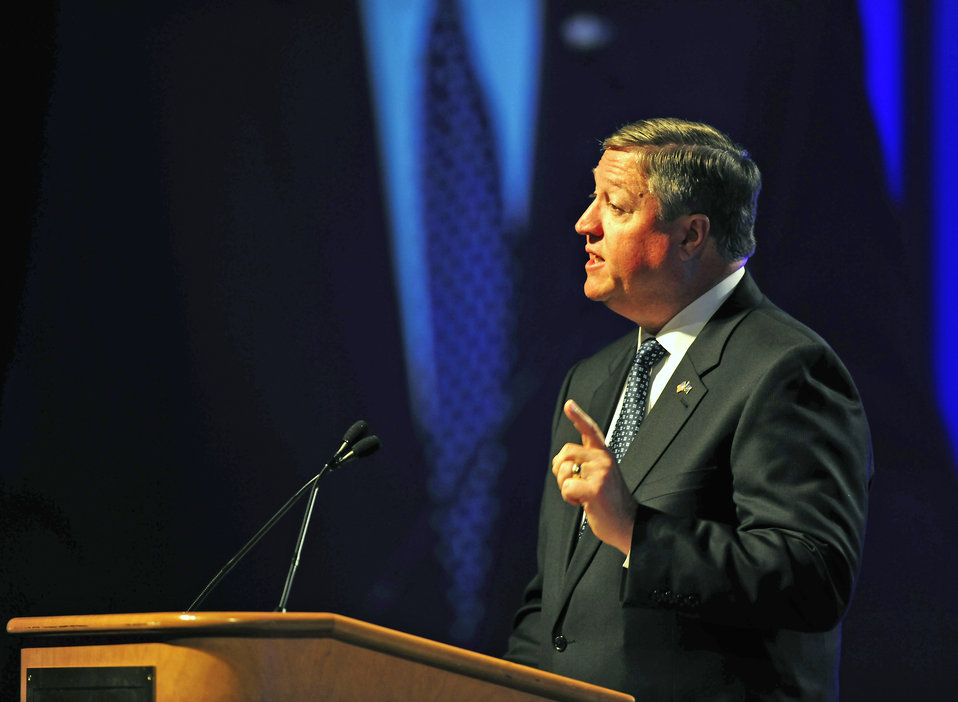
Keynote Speech for Chief Master of the Air Force James Roy

Secretary of the Air Force Michael Donley addresses some 1,000 people attending the Air Force Honors Banquet and Chief Master Sergeant of the Air Force Awards presentation on Aug. 18, 2010, in Atlanta. Secretary Donley spoke about the Air Force's commitment to Airmen and their families, and discussed the importance of strategic balance within the service. The banquet was part of the Air Force Sergeants Association Professional Airmen's Conference and International Convention.